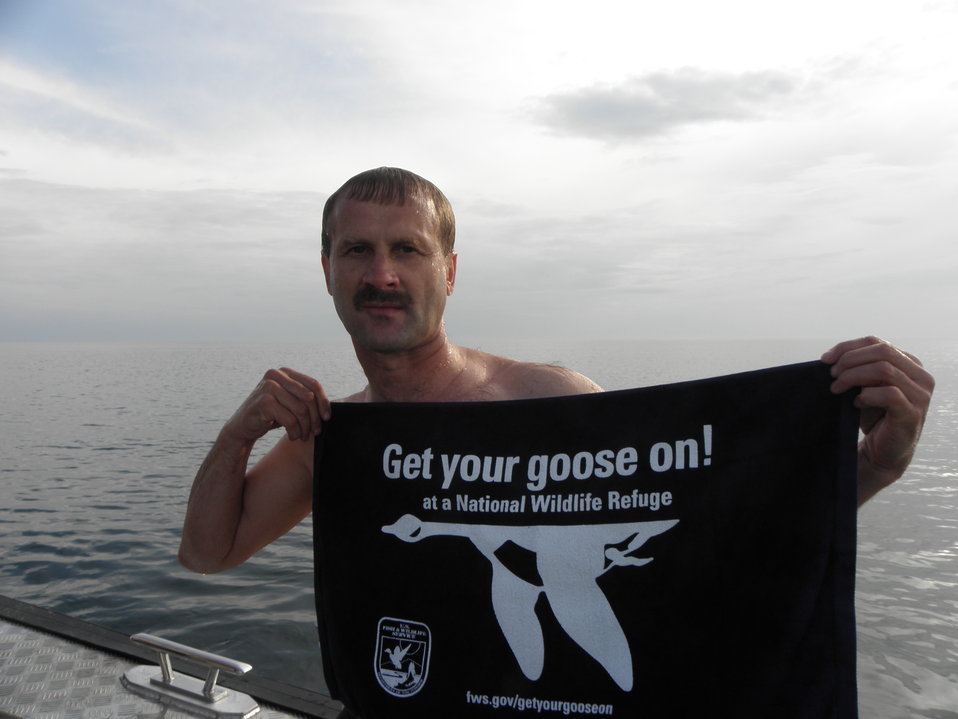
Get Your Goose On! - Russia Style

Taken at Lake Baikal during a USFWS trip to Russia.